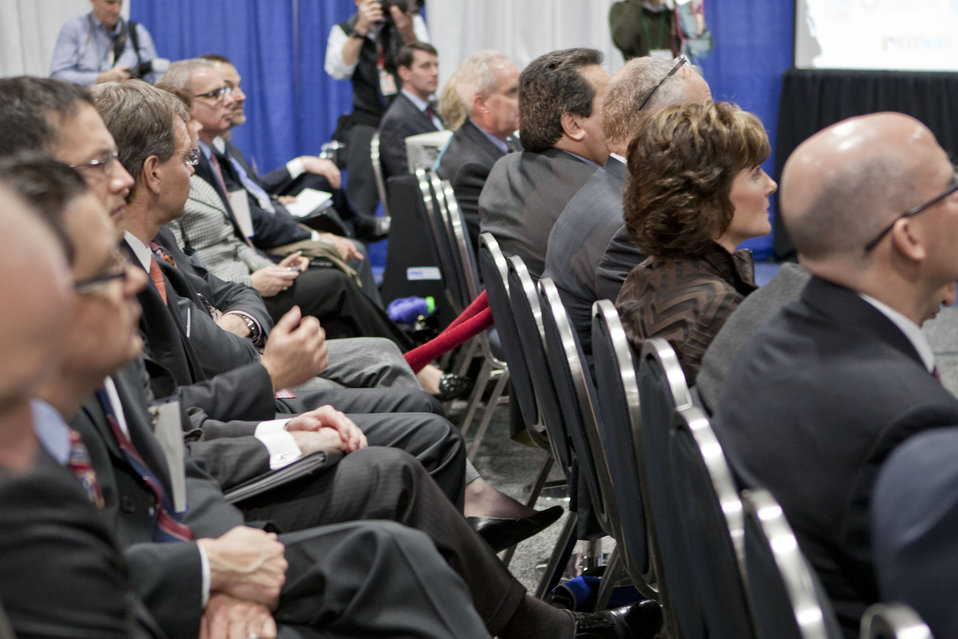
Energy Secretary Steven Chu was joined by several of the founding Workplace Charging Challenge partners and ambassadors at the Washington Auto Show.